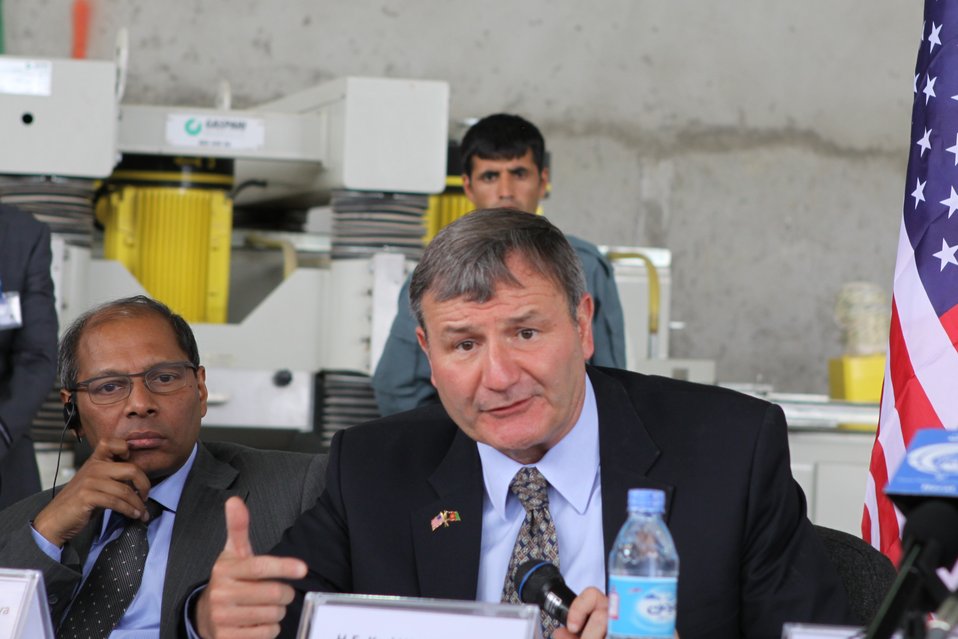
100525 Hirat Marble Conference 369